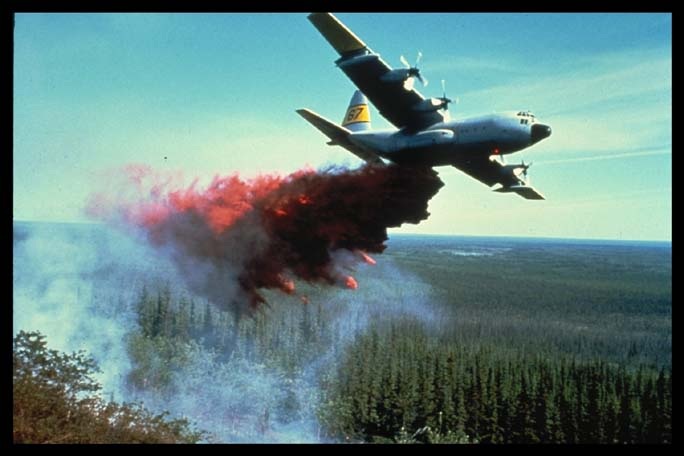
Airtanker drop